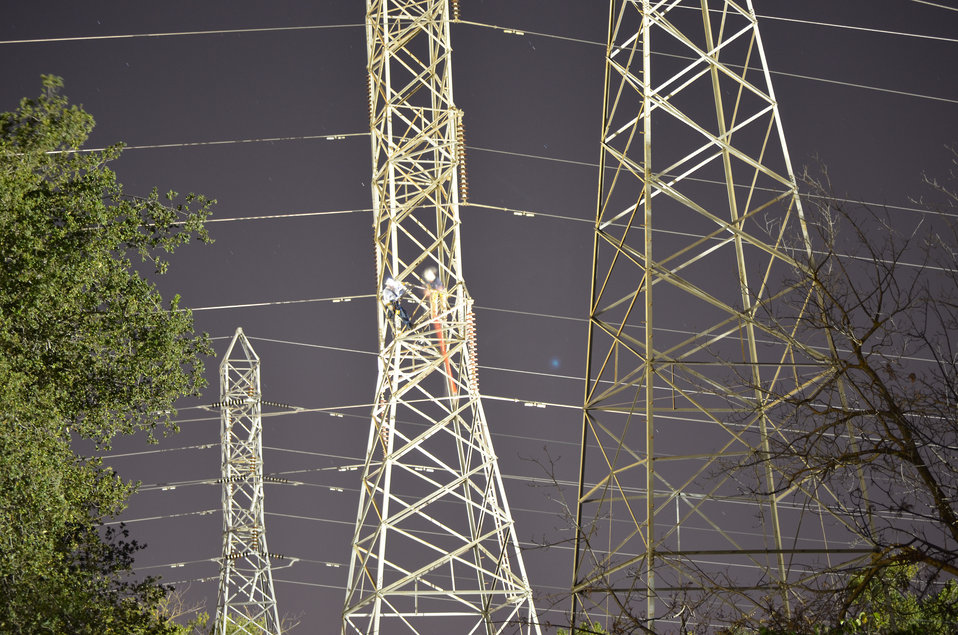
Workers from Western Area Power Administration de-energize high power lines Sept. 12, 2012 near the California State University-Sacramento so Corps contractors can safely install a seepage cutoff wall underneath the lines.
The Corps has built more than 20 miles of seepage walls into American River levees since 2000. Areas where construction was complicated by utilities, bridges or power lines were set aside for later construction.
The project is part of the American River Common Features project, a joint flood risk reduction effort between the Corps, the state’s Central Valley Flood Protection Board/Department of Water Resources and the Sacramento Area Flood Control Agency.